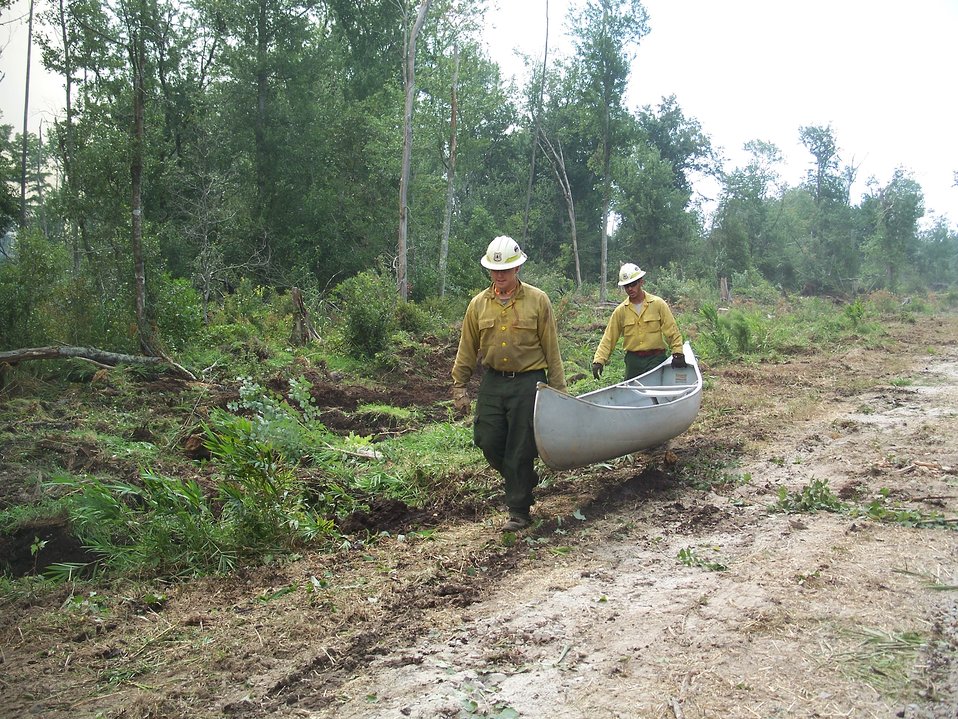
Firefighters' canoe transport

Suffolk, VA, August 2011: Firefighters at Great Dismal Swamp National Wildlife Refuge use canoes to get across ditches during the Lateral West Wildfire. Great Dismal Swamp was drained by ditches beginning in the late 1700's. Firefighters are pumping water from Lake Drummond to fill the ditches to flood the fire.